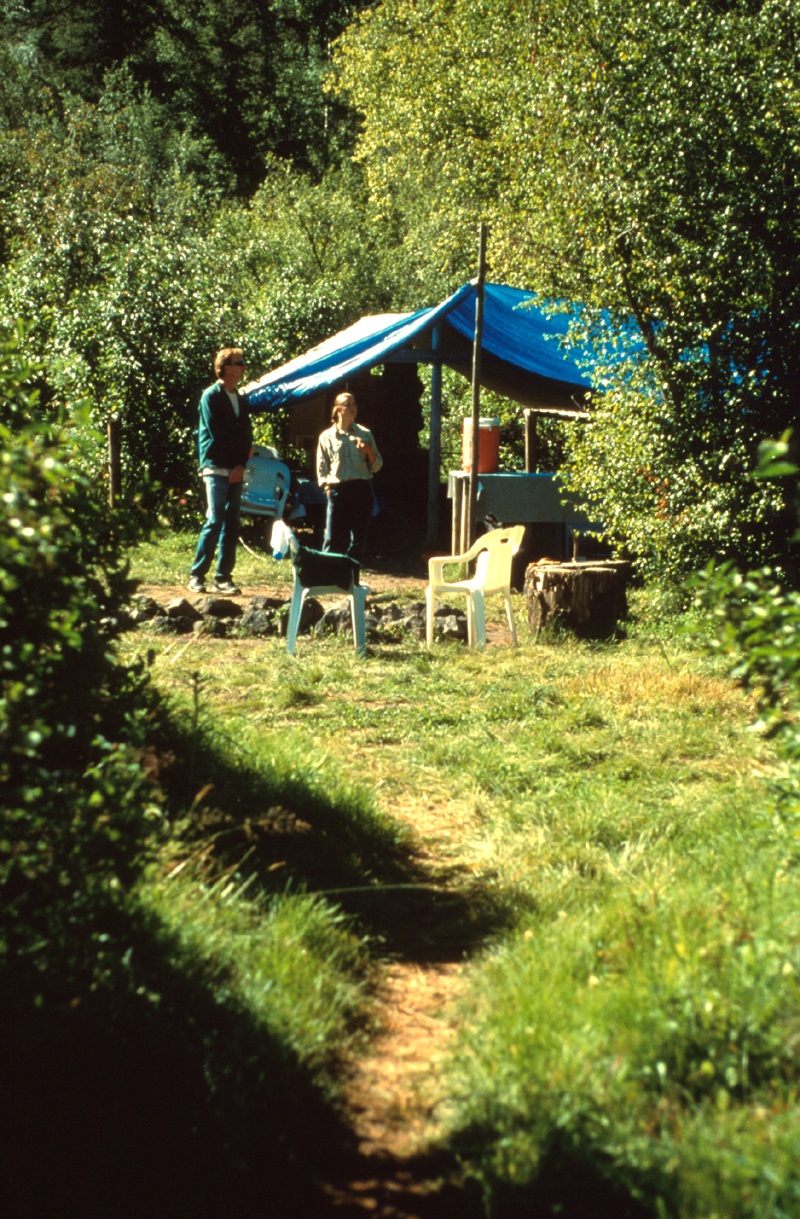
South Fork of the Snake River